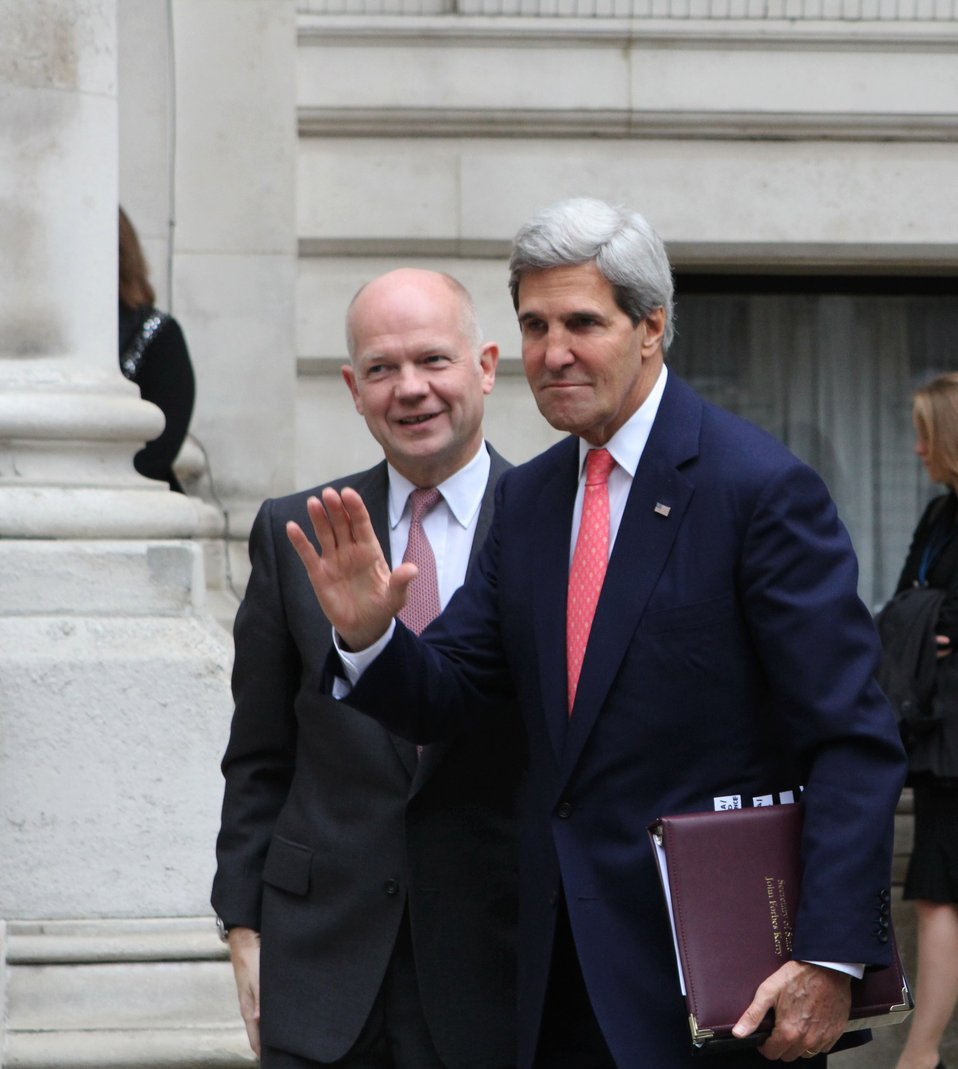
Secretary Kerry and British Foreign Secretary Hague Arrive at the Foreign and Commonwealth Office

U.S. Secretary of State John Kerry and British Foreign Secretary William Hague arrive at the Foreign and Commonwealth Office in London, United Kingdom on September 9 2013.